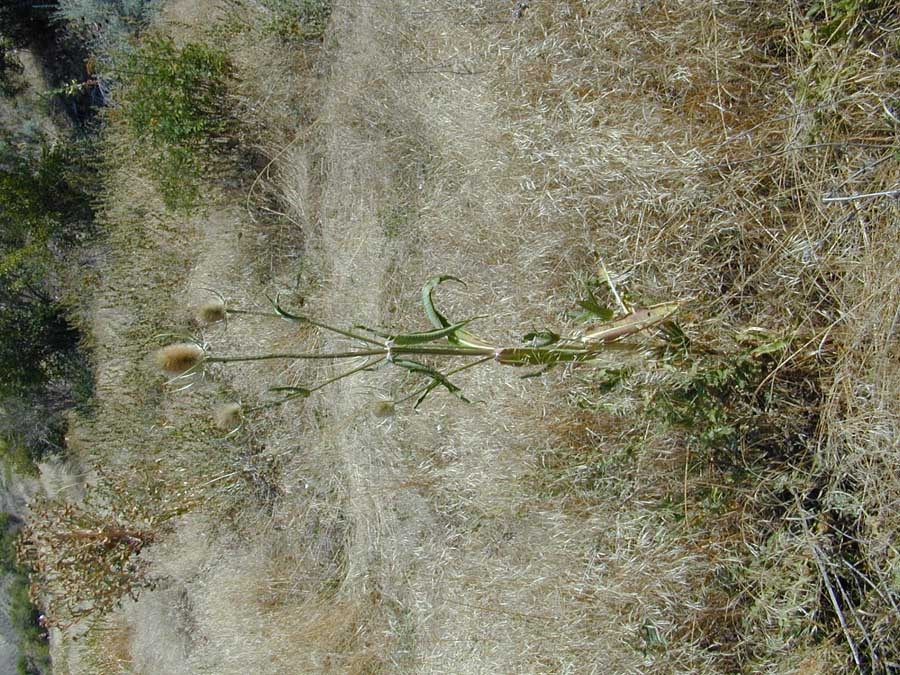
Diffuse Knapweed Idaho vegetation Plants in BLM